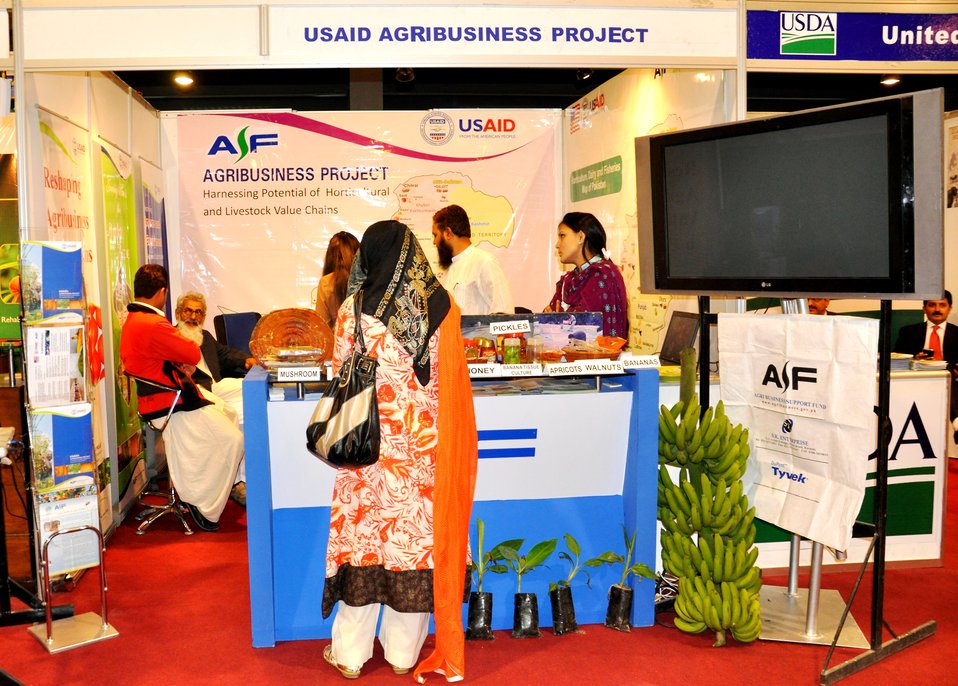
USAID Agri Business Project at the DAWN Agri Expo